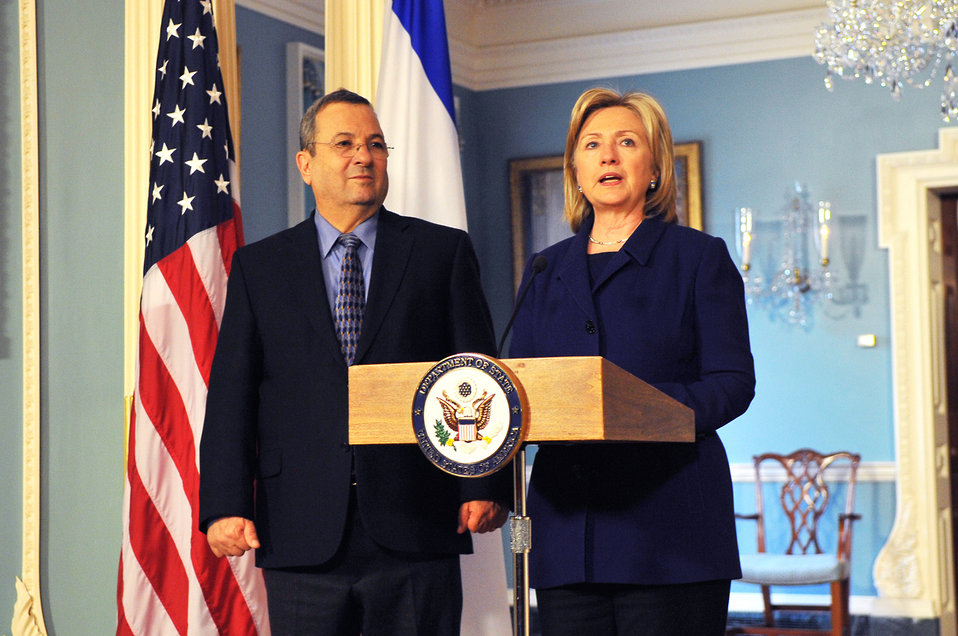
Secretary Clinton With Defense Minister Barak of Israel

U.S. Secretary of State Hillary Rodham Clinton and Israeli Defense Minister Barak speak at a press conference at the U.S. Department of State, Washington, D.C. February 26, 2010.